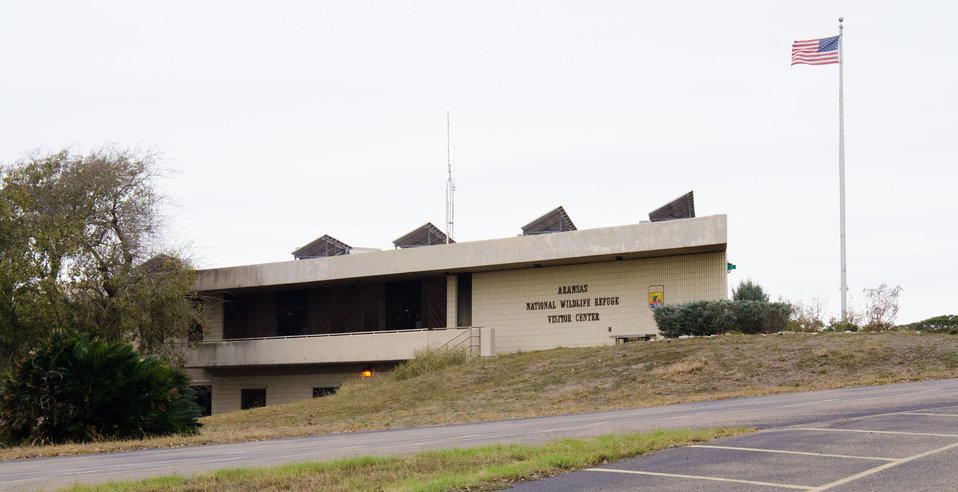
Aransas National Wildlife Refuge Visitor Center, in Austwell, TX, on Friday, Dec. 16, 2011. Federal and state partners, including representatives from U.S. Fish and Wildlife Service and local soil and water conservation districts (SWCDs) held a press conference at the refuge. U.S. Department of Agriculture (USDA) Natural Resources Conservation Service (NRCS) State Conservationist Salvador Salinas was the keynote speaker; Copano Bay Soil and Water Conservation District Board Member Dallas Ford opened the event; and U.S. Department of the Interior, Fish and Wildlife Service Aransas National Wildlife Refuge Manager Dan Alonso gave background information about the 115,000-acre refuge that was established in 1939. The refuge fresh water comes from the San Antonio River which flows by the historic Alamo southeasterly toward the Guadalupe River at the estuary of San Antonio Bay, the primary body of water for the refuge. Nationally, USDA-NRCS is dedicating up to $50 million over three years to this effort and will continue to provide the proven technical expertise and that of their partners. The anticipated result is improved water quality, stream flows and wildlife habitat.